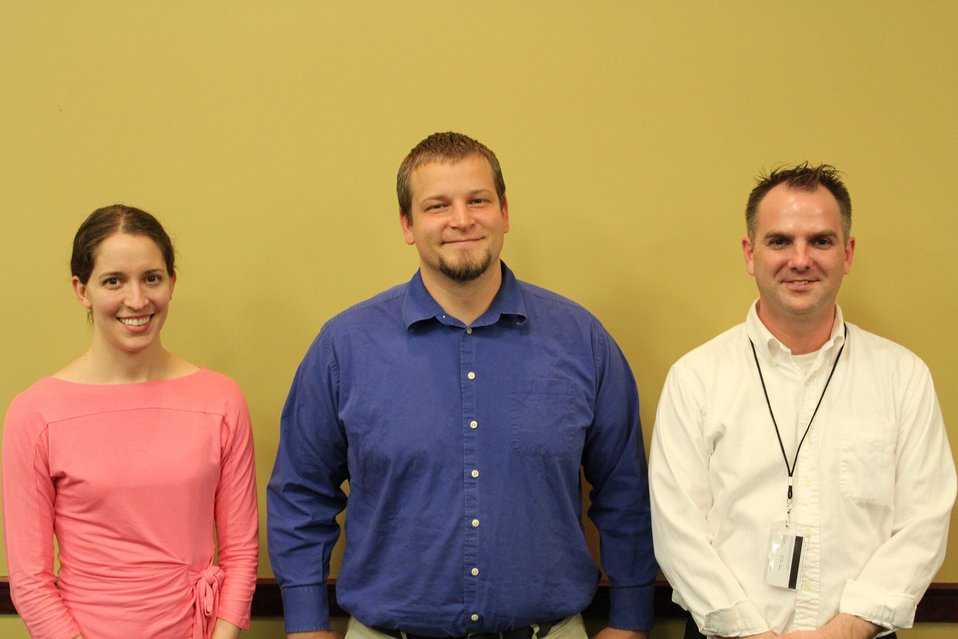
RMKC staff acknowledged for five years of service - Sarah LeRoy, Jake Ersland, and Greg Bognich; Location: National Archives at Kansas City, Kansas City, MO